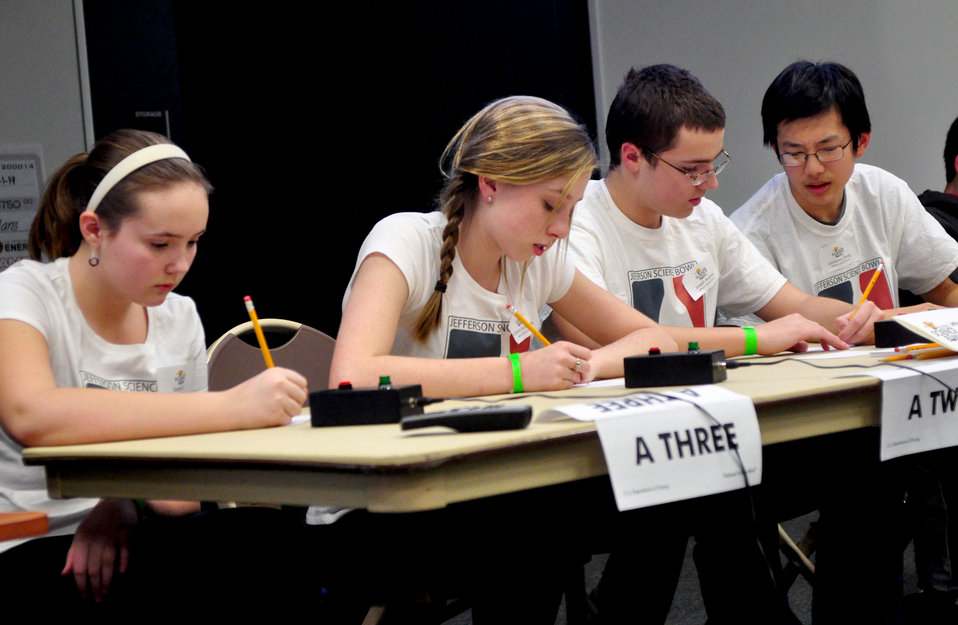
Jefferson Middle First Place

14-017 DOE photo Lynn Freeny 2-1-2014 Oak Ridge Tennessee